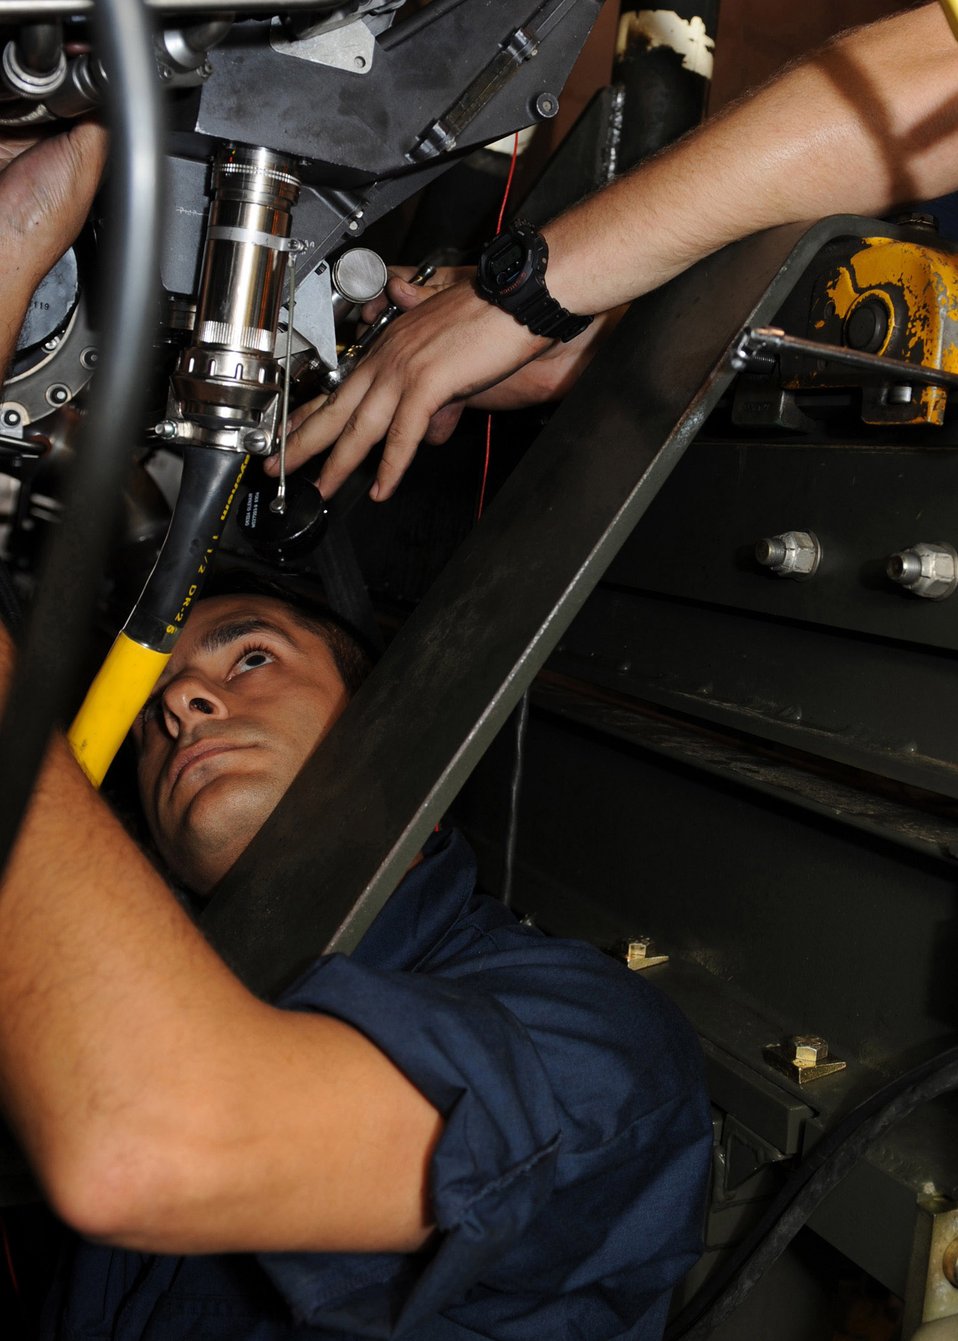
Engines running

Senior Airman Shaan Kashyap installs the mount bolts of an engine diagnostics unit at Seymour Johnson Air Force Base, N.C., May 21. Airman Kashyap is responsible for running ground, which means to check for damage or mishaps while the engine is running. Airman Kashyap is assigned to the 4th Component Maintenance Squadron as an aerospace propulsion specialist,